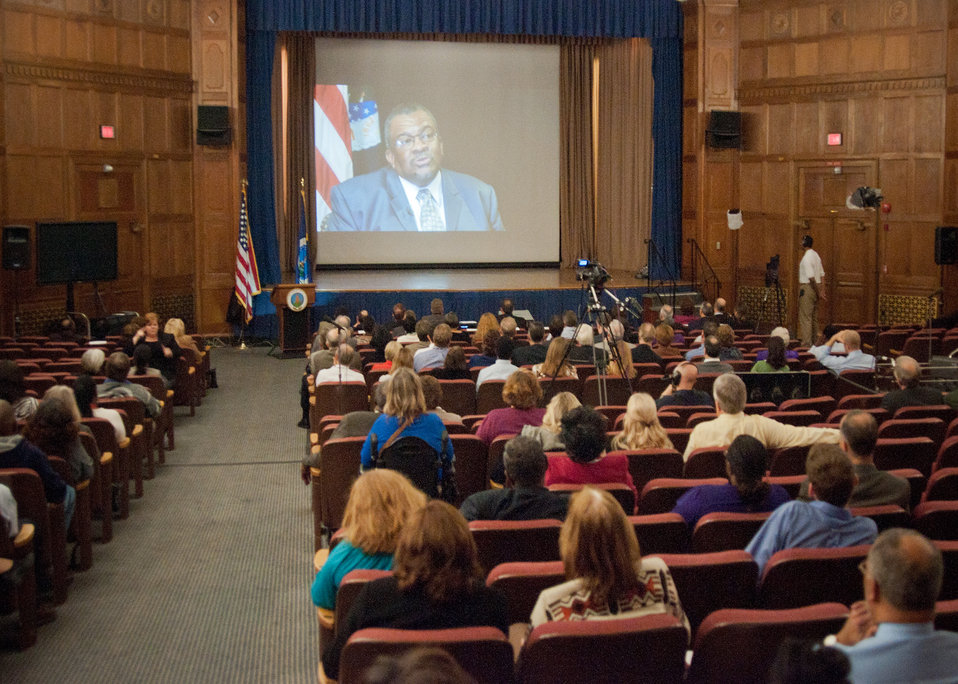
Willie Williams one of the many retiring employees reflects on his accomplishments with the agency during the Rural Development Celebration of Service held at the United States Department of Agriculture in Washington, DC, on Wednesday, November 16, 2011. The event was lived streamed to Rural Development offices across the country.